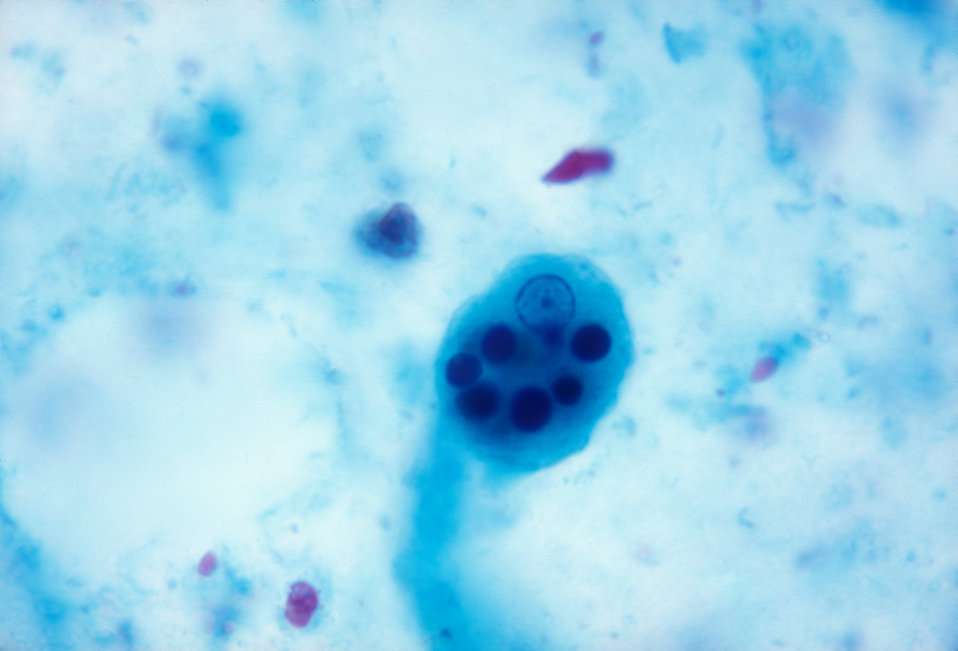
Entamoeba histolytica trophozoite. Parasite, ameba.